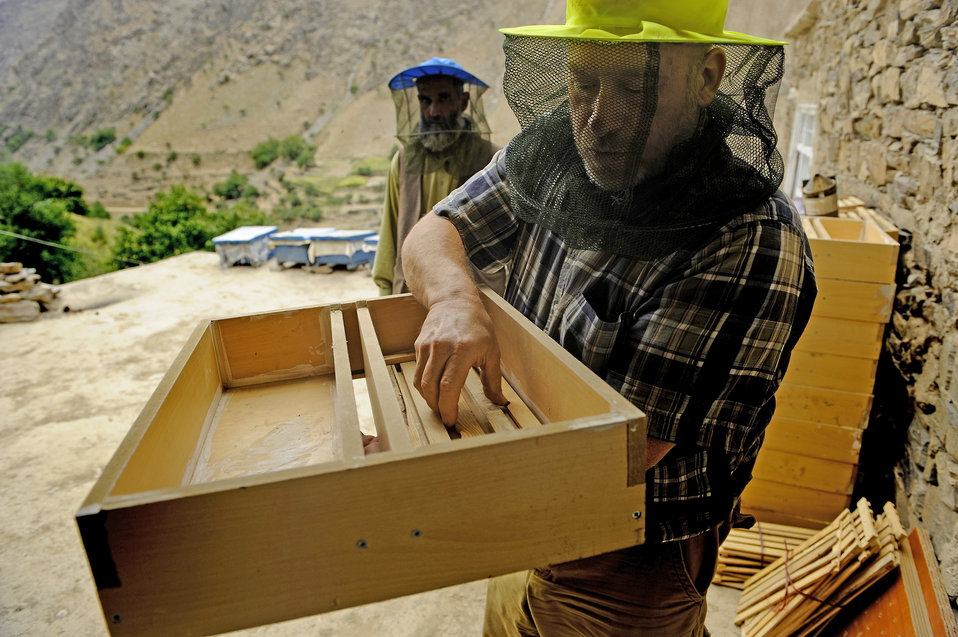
Bringing bees in to produce honey and pollinate Panjshir

Greg Schlenz inspects a hive-top feeder Sept. 7, 2009. The feeders are filled with sugar syrup and placed on top of the hives during the winter, so the bees will have enough food to survive. Mr. Schlenz is the U.S. Department of Agriculture representative to the Panjshir Provincial Reconstruction Team.